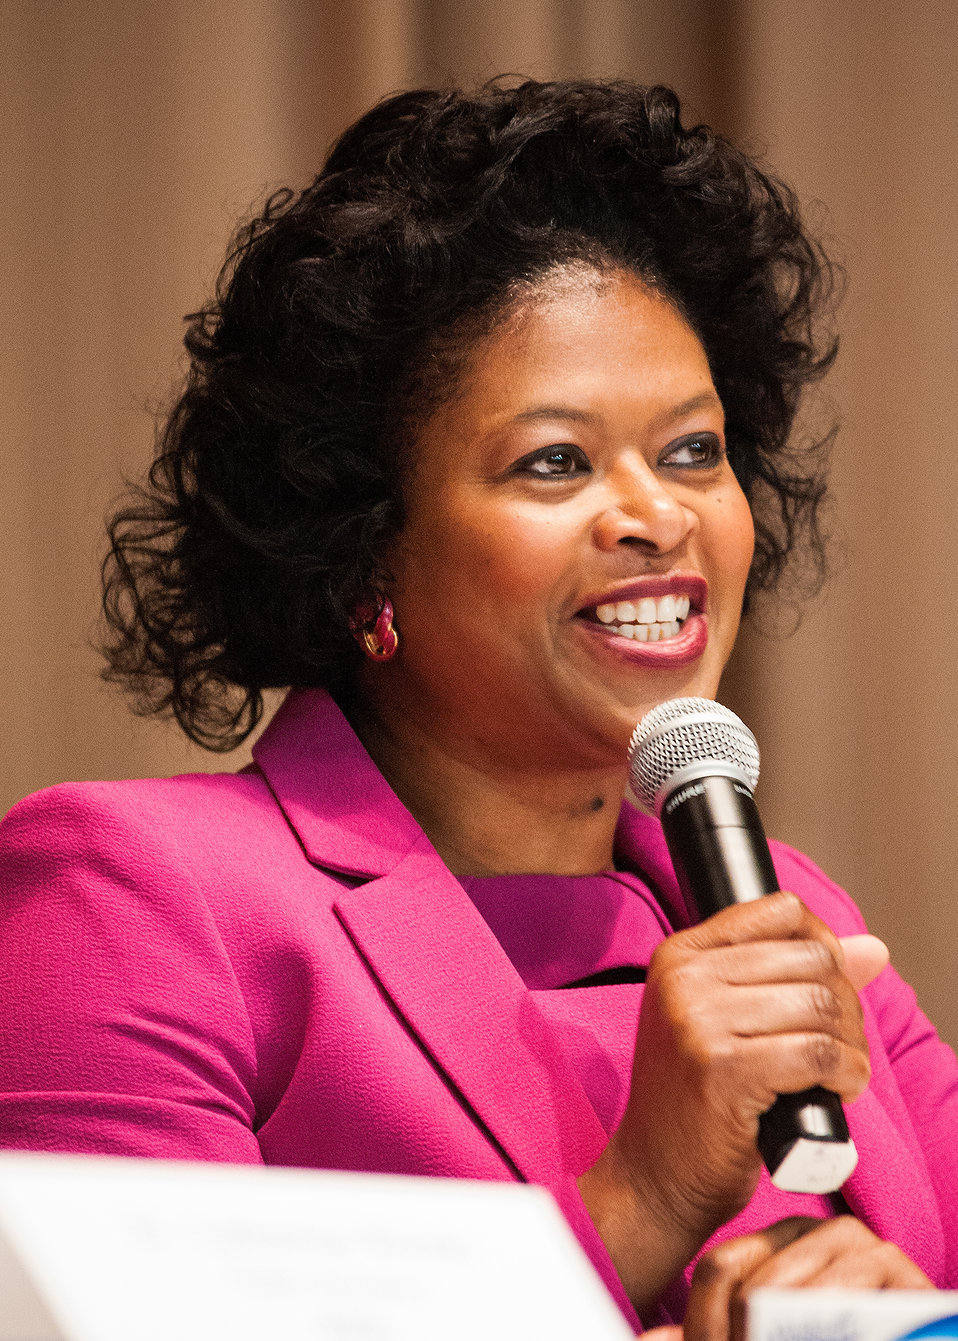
U.S. Department of Agriculture (USDA) Associate Chief Information Officer (Technology) Ms. Yvonne Jackson was one of four panel members at the Office of the Chief Information Officer’s National Women’s History Month celebration at the USDA Jefferson Auditorium in Washington, D.C. on Thursday, Mar. 14, 2013. The theme of this year’s celebration is, “Recognizing American Women’s Outstanding Contributions to the Field of Science, Technology, Engineering and Mathematics,” commonly referred to as STEM. Each panel member answered four questions: Who in History was a good role model? What were your biggest hurdles being in Science, Technology, Engineering and Mathematics (STEM) ? And for women today what is your single piece of advice? All panel members mentioned setting professional and personal goals, strength of family and loving their career choices.